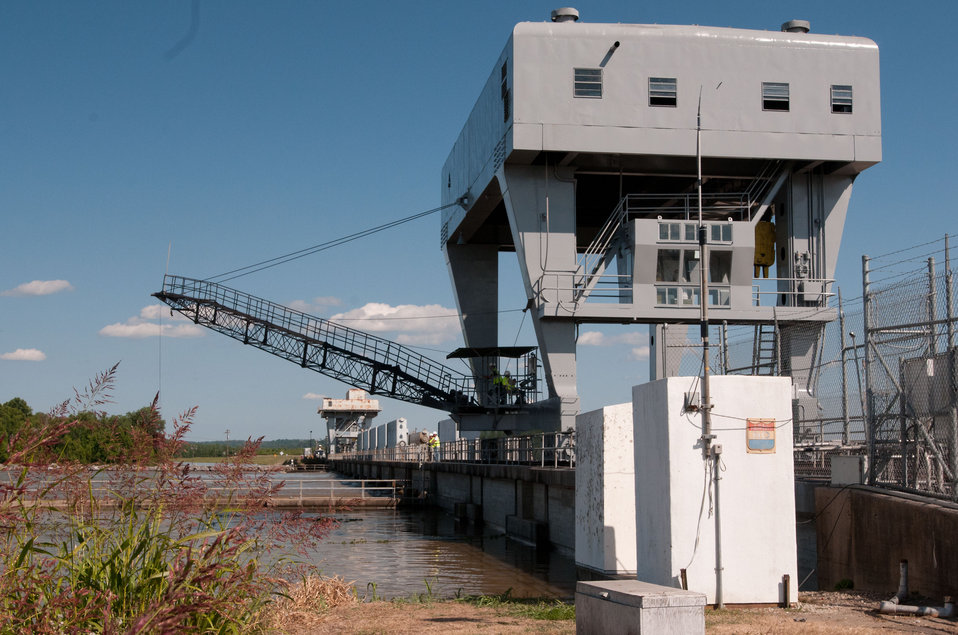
The Army Corps of Engineers conduct daily depth measurements along the intake side of The Old River Control Complex, Low Sill Structure in Concordia Parish, LA, on Tuesday, May 17, 2011. The measurements tell both the condition along the intake “ramp” and allow them to calculate the flow through the gates. The Old River Control Complex is designed to channel as much as 30 percent of the Mississippi River’s flow into the Gulf of Mexico through it’s eleven 44-foot wide gates across 566 foot span that separates the Mississippi and (the outflow channel to the) Red and Atchafalaya Rivers. Rated at 300,000 million gallons per minute (note: That’s more than seven Olympic sized swimming pools every second). Although this helps the Mississippi River, it (along with other concerns, puts back pressure on the Red River and other waterways, possibly causing some flooding of farms to avoid a catastrophic breech of the levee system. Most of the gates have been opened by a rolling crane and stored in racks. Debris, some as larger than telephone polls make their way through the gates and pool in eddies. The constant motion and contact with other objects, strip trees of their branches and bark. 20-30 pound Carp can frequently be seen jumping out of the white water.